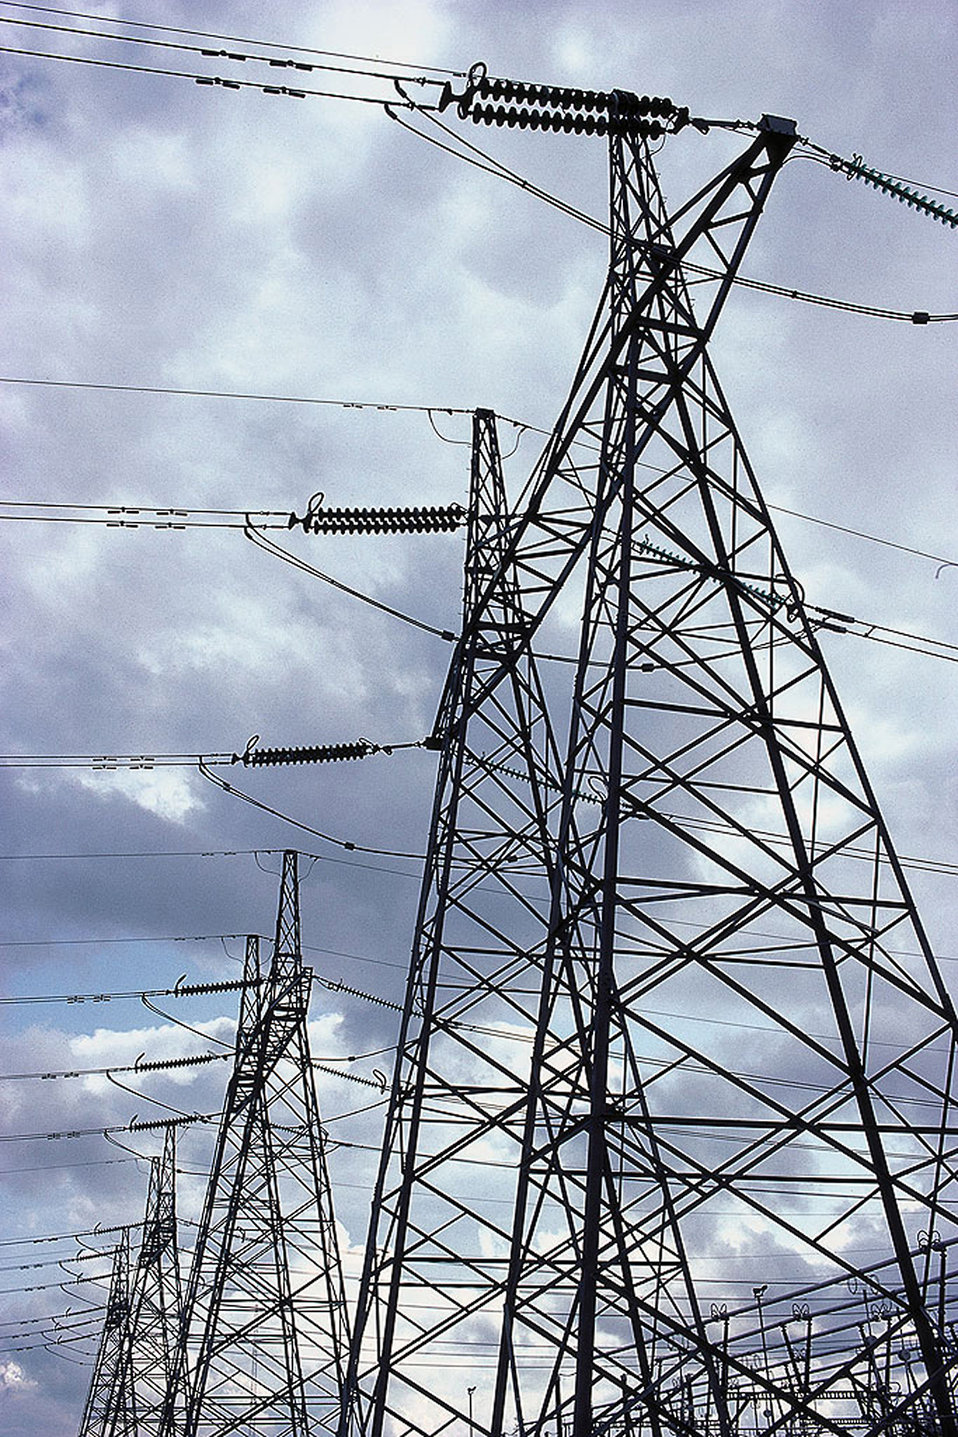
Energy Policy